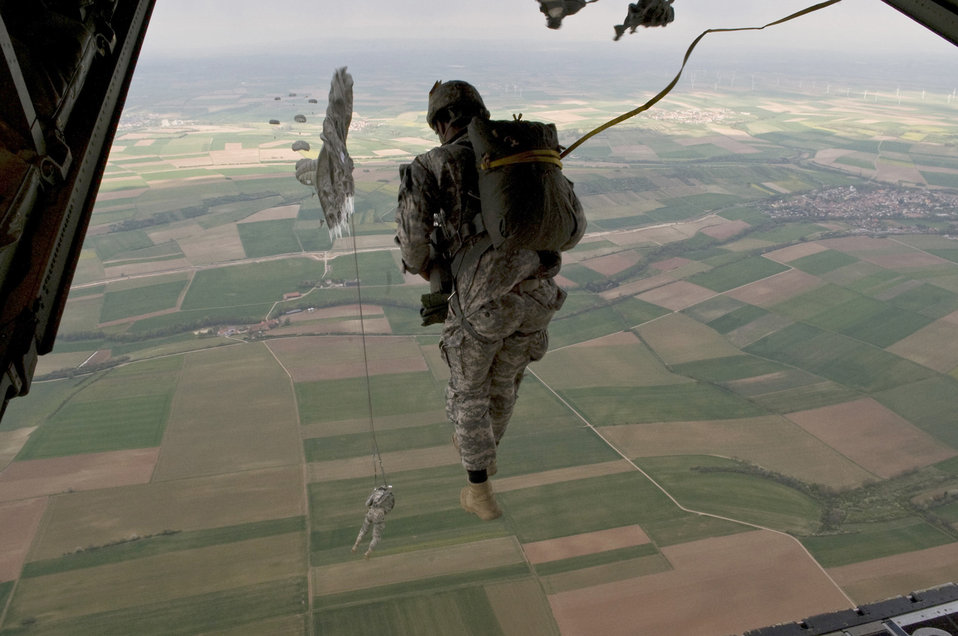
See you on the ground

U.S. Army paratroopers exit a C-130J Super Hercules April 14, 2011, during an airdrop training mission at a drop zone near Manheim, Germany.